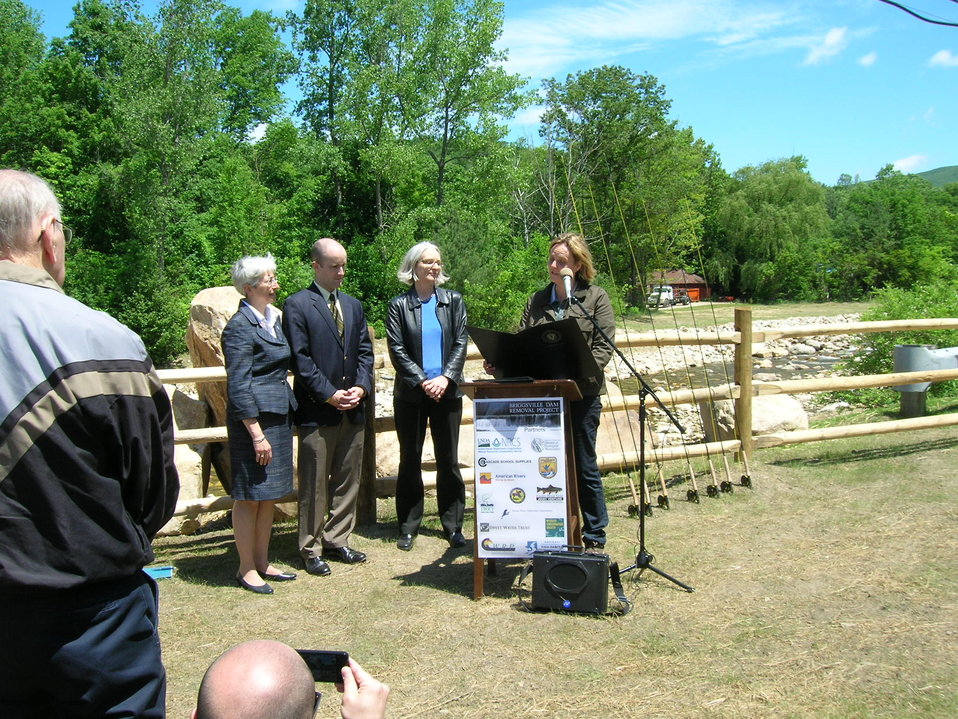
Briggsville Dam Removal Celebration